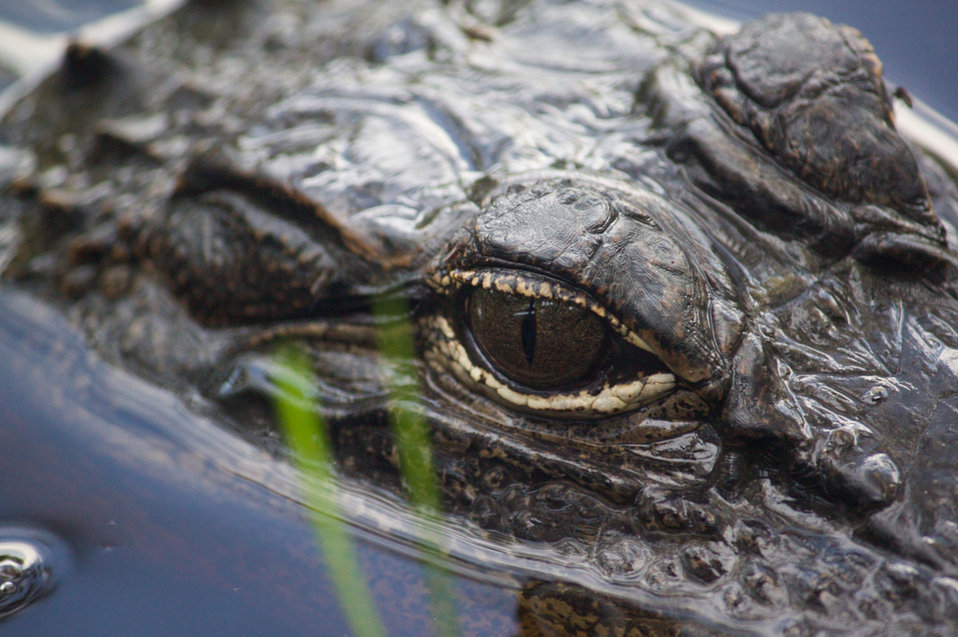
eye to eye with an alligator

J.N. Ding Darling National Wildlife Refuge, FL